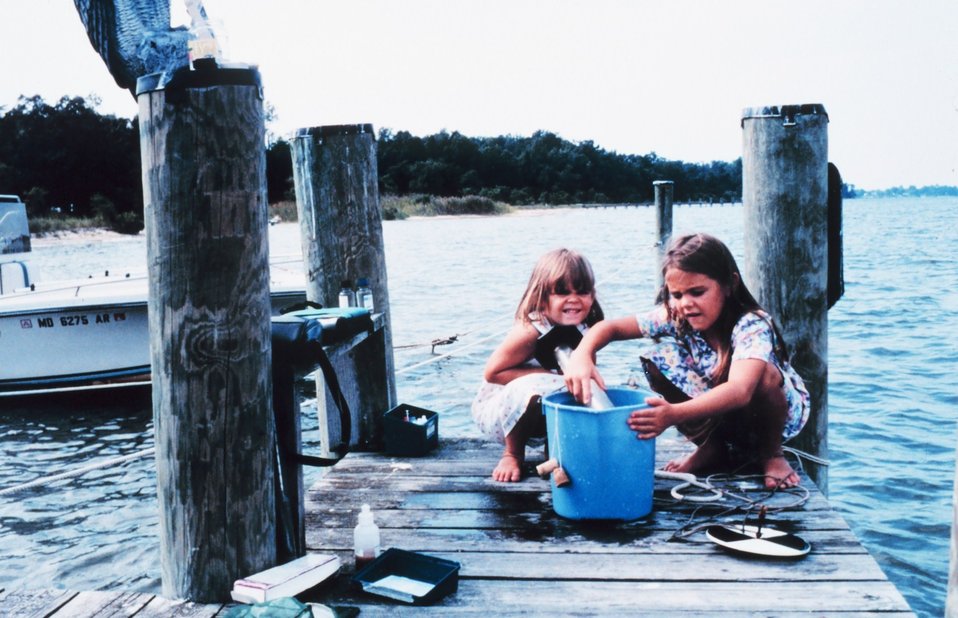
Small hands helping do a big job. Taking water samples at a water quality station.